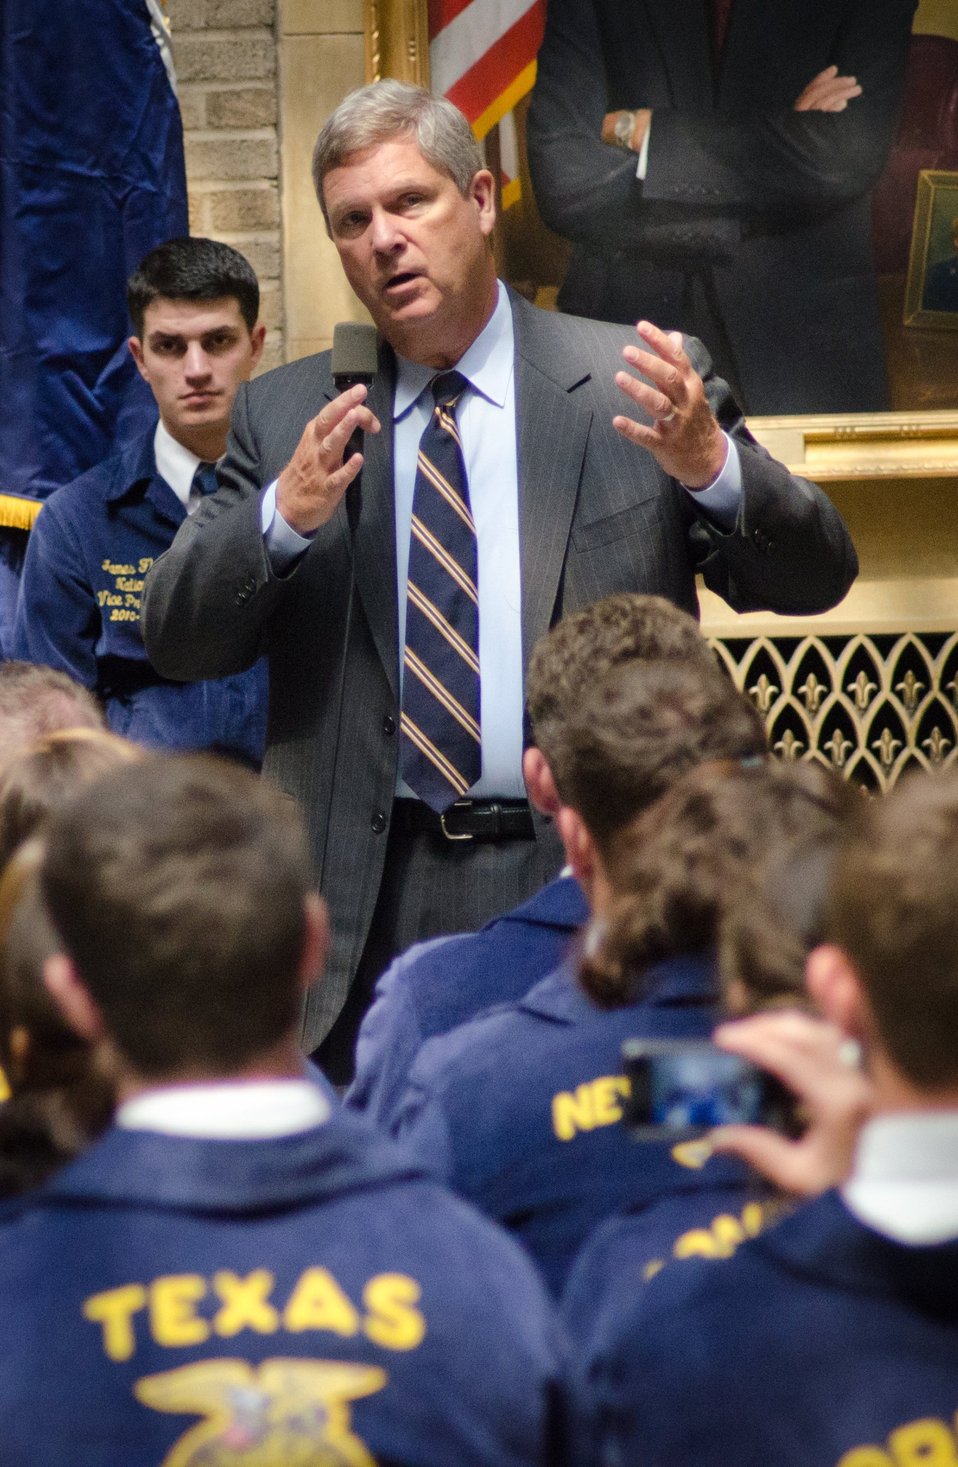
Agriculture Secretary Tom Vilsack speaks with the National Future Farmers of America (FFA) leadership at the U.S. Department of Agriculture in Washington, DC, on Thursday, July 28, 2011.